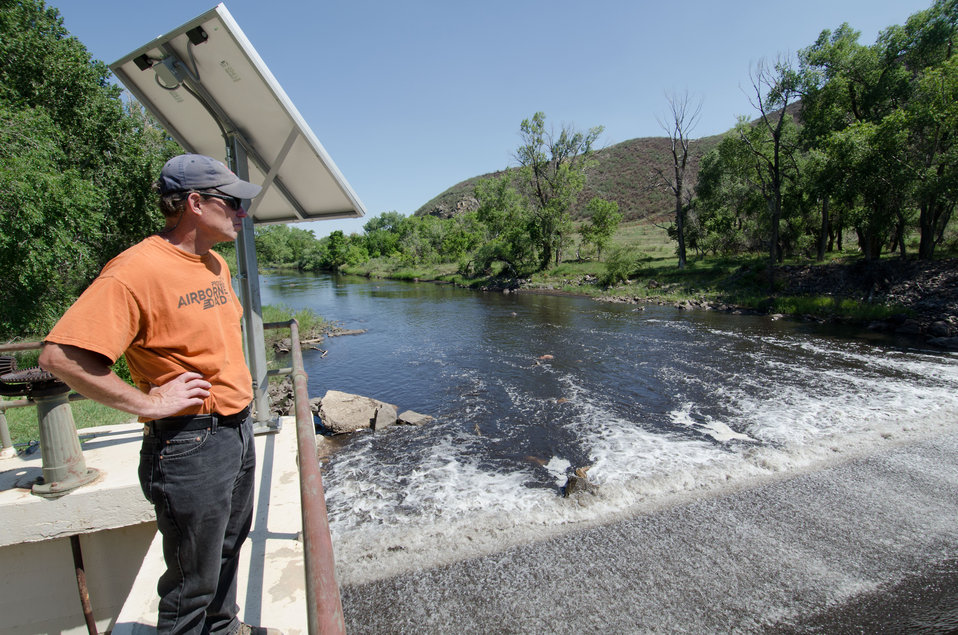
U.S. Department of Agriculture District Conservationist Todd Boldt peers down from a water control facility to see the effects upon the water, downstream of the Hewlett Gulch Fire, in the Poudre Canyon area, on Friday, July 20, 2012, near Fort Collins, Colorado. Unmitigated runoff have turned the water in this river from clear water to nearly black water heavily laden with ash, silt, and burnt debris that recent thunderstorms have already washed down from the mountainsides. When he dug down into the riverbanks, he found ash 18 inches below the surface, at the water’s edge. At its peak more than 400 firefighters were battling fires pushed by 50 mph winds. When the last embers were cooled, more than 12-square miles lay blacked at a cost of approximately 3.2 million dollars to fight. The aerial distribution of straw has successfully kept nearby Seaman Reservoir clean for the drinking water of the City of Greeley. Forest Service lands receive straw, while private and other lands receive a seed mix and straw to promote ground cover plant growth on ash-covered lands. In total, 1,800 tons of straw will be applied during the 14-day operation. One quarter of the cost was paid by the City of Greeley and the U.S. Department of Agriculture funded the remainder.